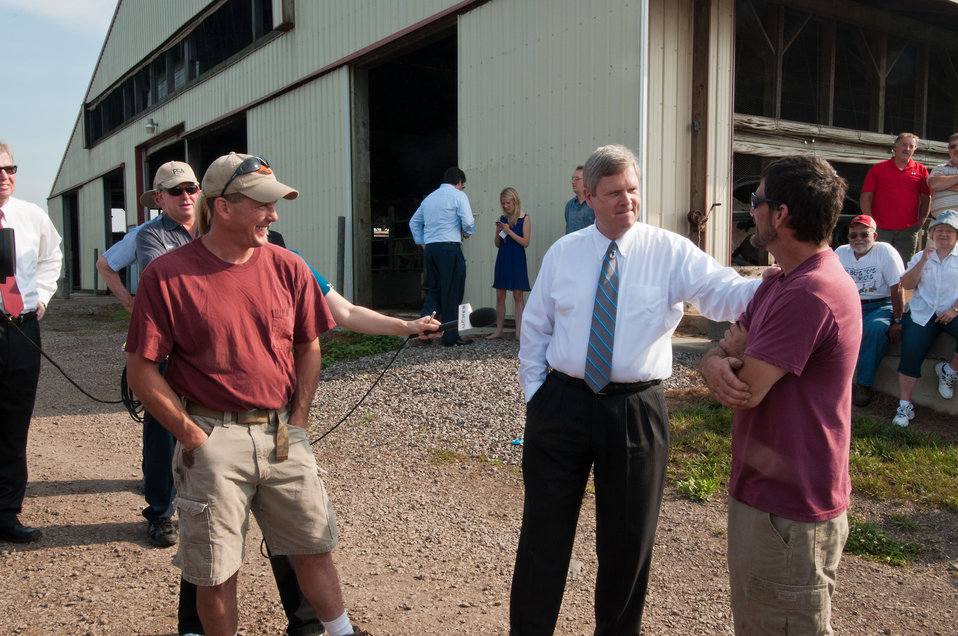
From left: Duane Stoltzfus, Agriculture Secretary Tom Vilsack and Glenn Stoltzfus on Pennwood Dairy Farms Berlin, PA during Secretary Vilsack’s visit on Tuesday, July 17, 2012. The Secretary highlighted the U.S. Department of Agriculture’s (USDA)energy efficiency programs and announced a new effort to help rural consumers make affordable, energy-efficient improvements to their homes and businesses. The Stoltzfus’ use an anaerobic digester to produce energy to operate the farm. The digester produces one million kilowatt hours; half of the energy needs of the farm, the other five hundred thousand kilowatt hours are sold back to the grid. An anaerobic digester is a component of a waste management system that provides biological treatment in the absence of oxygen. The digester captures biogas for energy production, manages odors, reduces the net effect of greenhouse gas emissions, and reduces pathogens. The anaerobic digester practice is part of a planned conservation management system that manages manure and/or comprehensive nutrient management system.